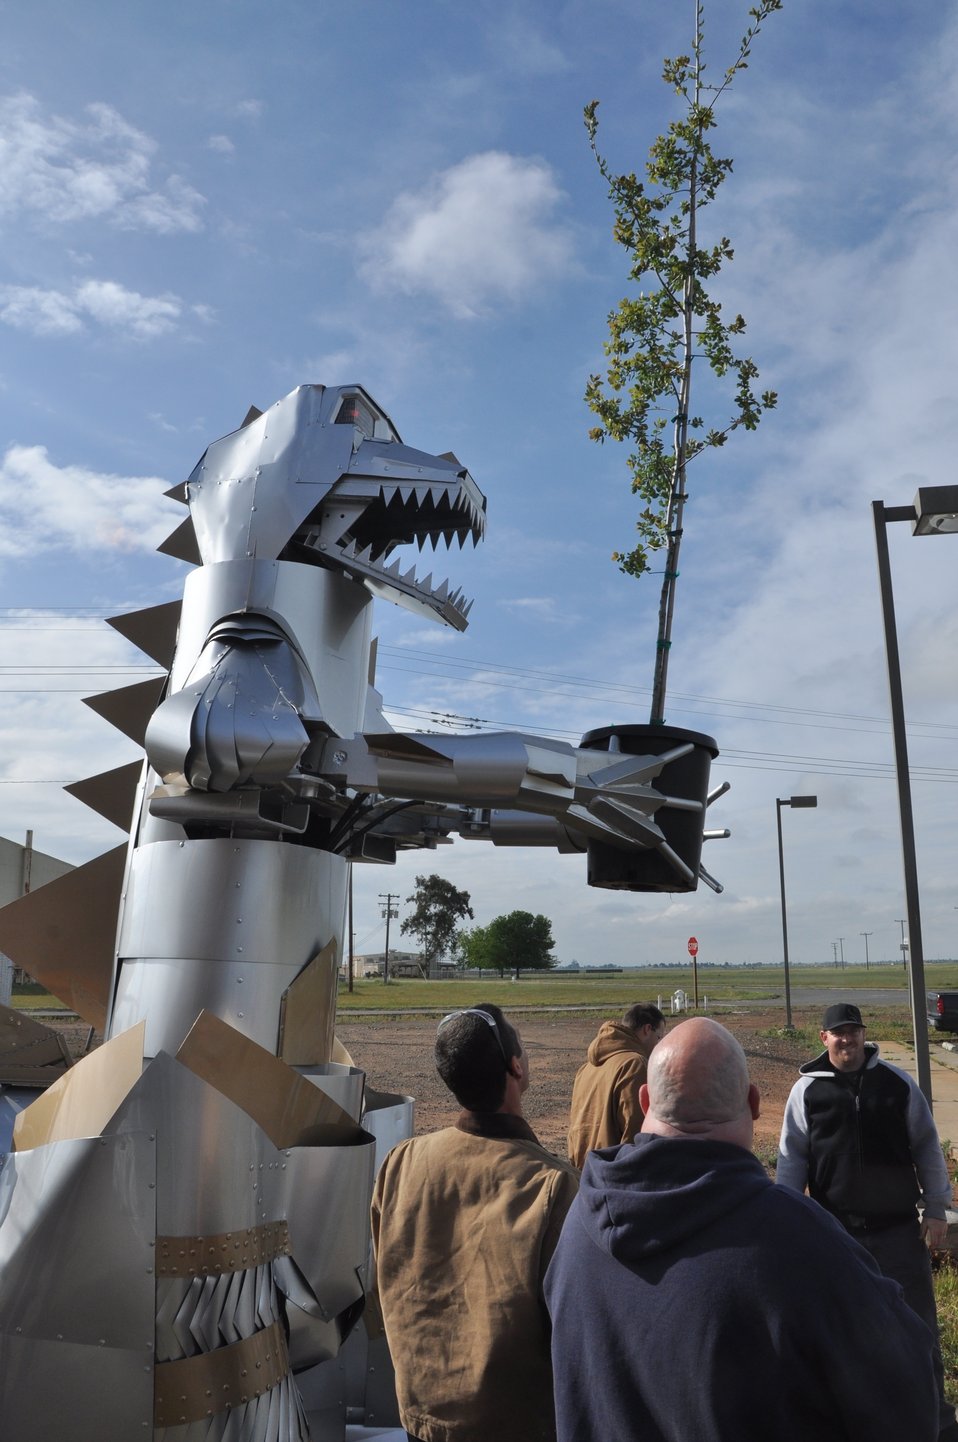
Air Force officals plant trees across America

DieselZilla, a robot built by students in the American River College clean
diesel program, helps plant a tree for Earth Day April 22, 2010, at the former Mather Ai Force Base, Sacramento, Calif.